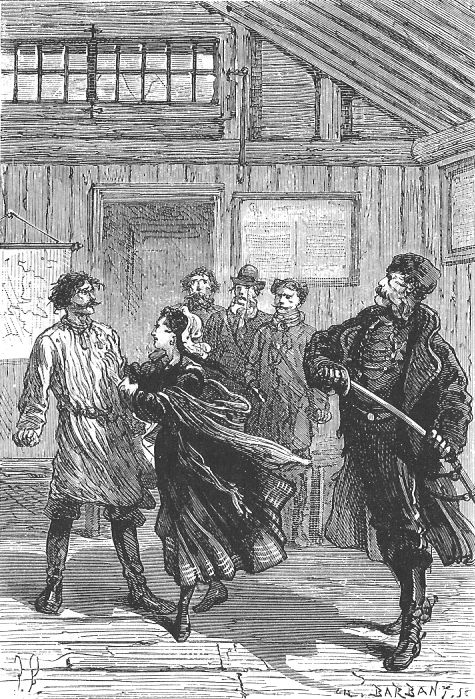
An illustration from the novel 'Michael Strogoff: The Courier of the Czar' by Jules Verne drawn by Jules Férat. Polski: Ilustracja powieści Juliusza Verne'a 'Michał Strogow, kurier carski' autorstwa Julesa Férata. Français : 'Michel Strogoff. Le courier du tzar', Jules Férat. Français : « Défends-toi, car je ne te ménagerai pas ! »